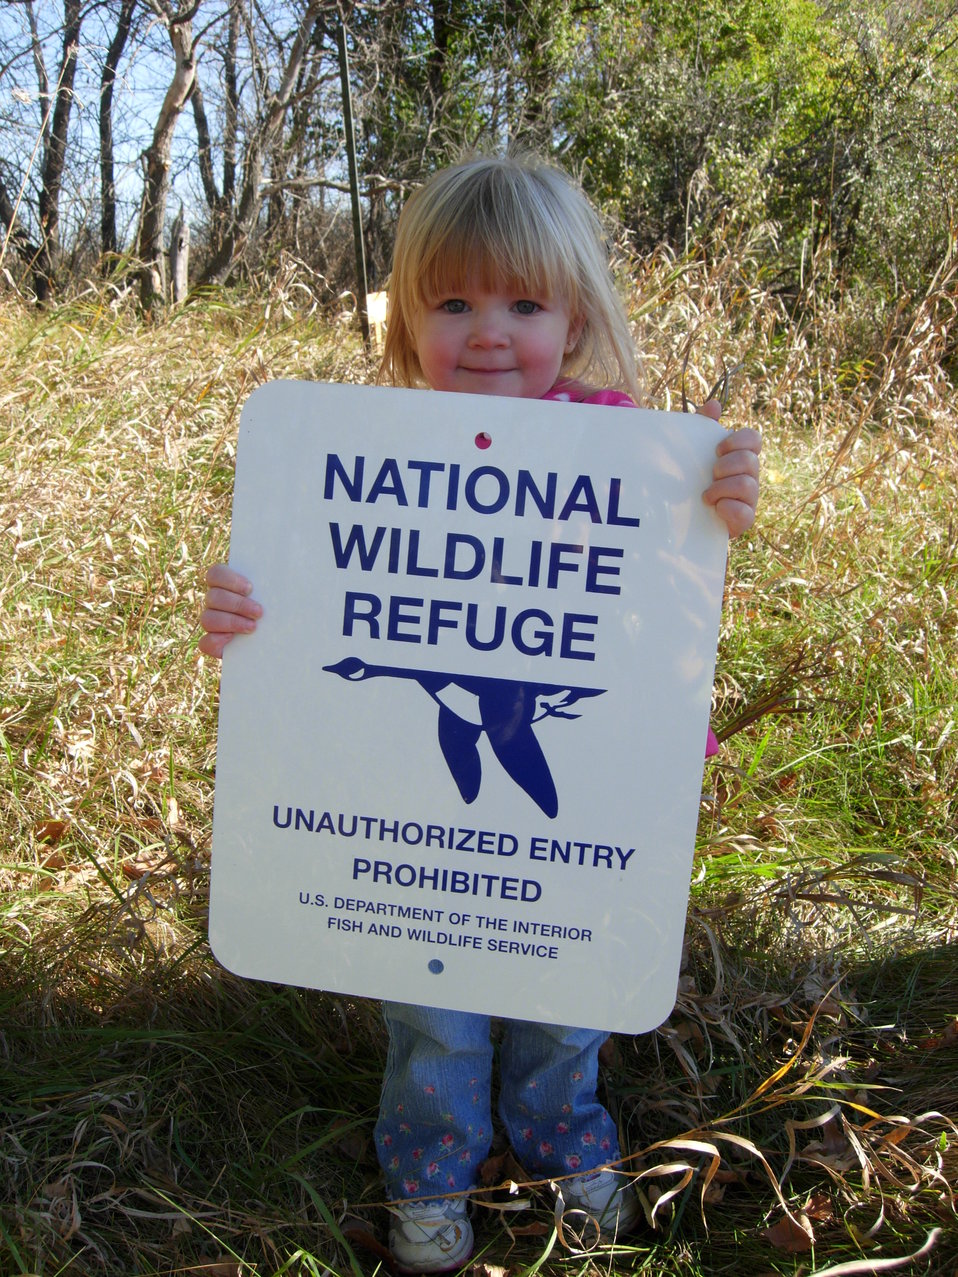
Girl Holding National Wildlife Refuge Sign

This little girl made it safely to the refuge during the migration game played during Upper Souris Refuge's 75th Birthday celebration in North Dakota.